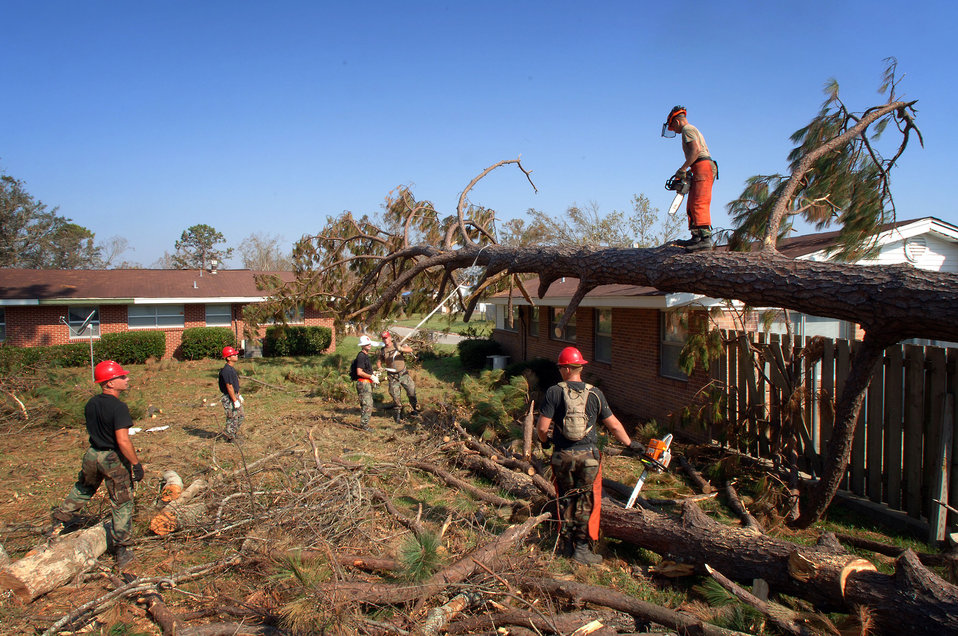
Keesler cleanup going well

KEESLER AIR FORCE BASE, Miss. -- Airmen with the 823rd Red Horse Squadron from Hurlburt Field, Fla., start another day of clearing and removing fallen trees from the base housing area here. More than 90 of the squadron's Airmen are deployed here to help with the base's hurricane recovery effort.